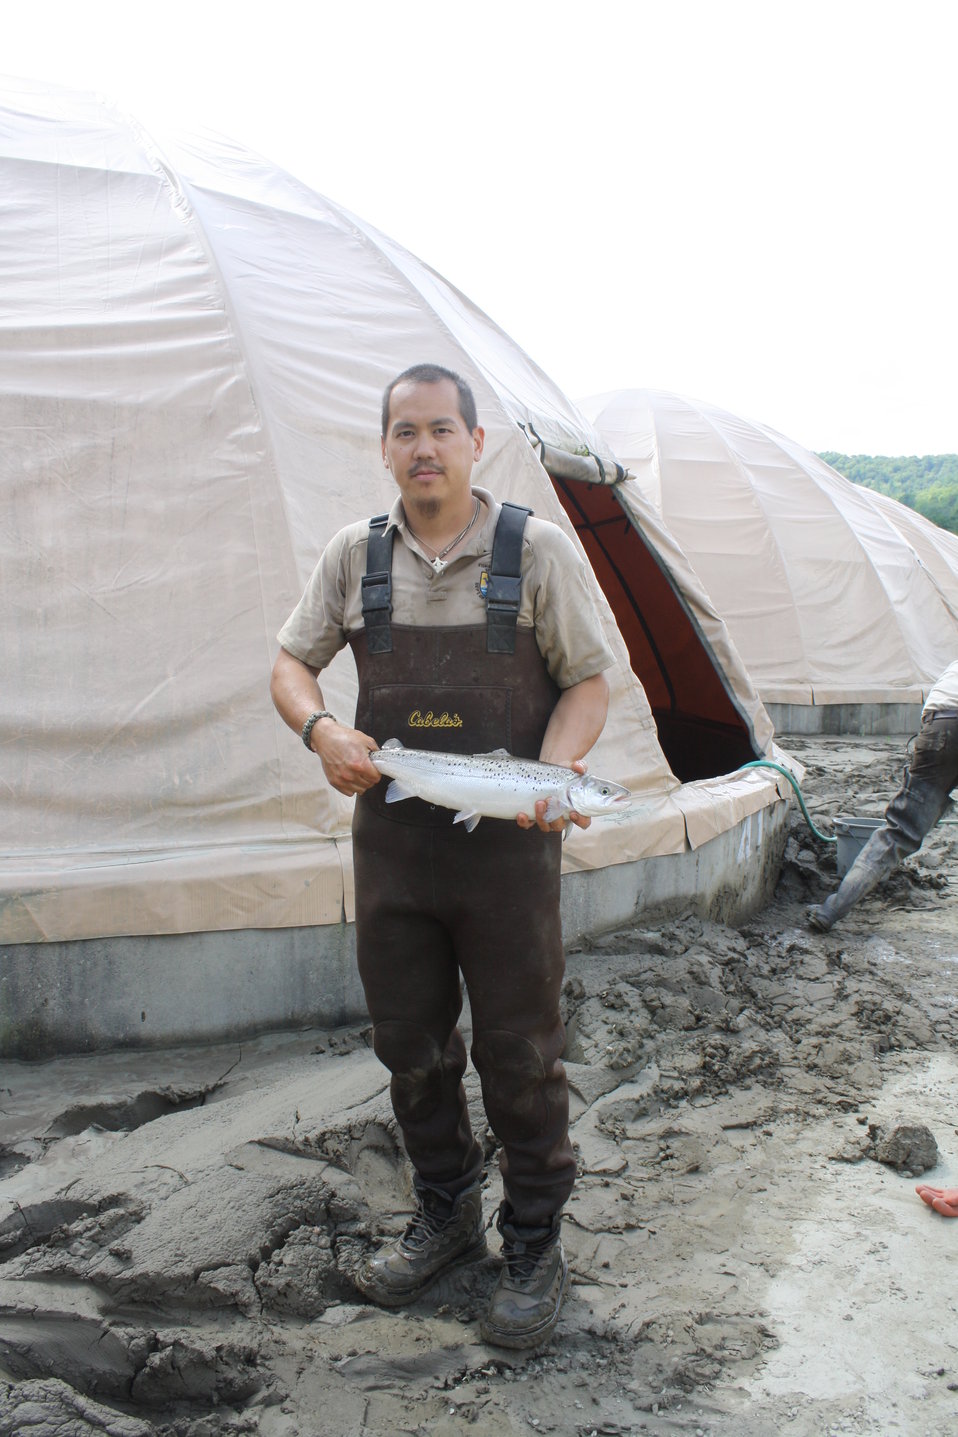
USFWS technician with Atlantic salmon

USFWS technician sorting fish (Atlantic salmon) that escaped and were recaptured after flood waters from Hurricane Irene receded.